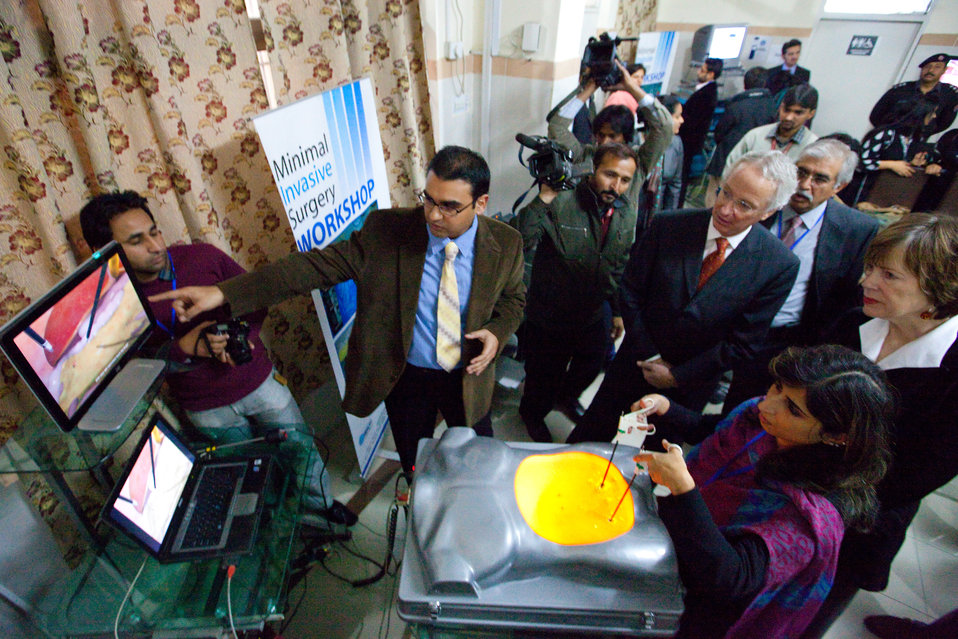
Telemedicine

Rawalpindi, January 5, 2012 – Ambassador Cameron Munter and his wife Dr. Marilyn Wyatt sitting with Dr. Asif Zafar Malik, Project Director Telemedicine/training and other officials.